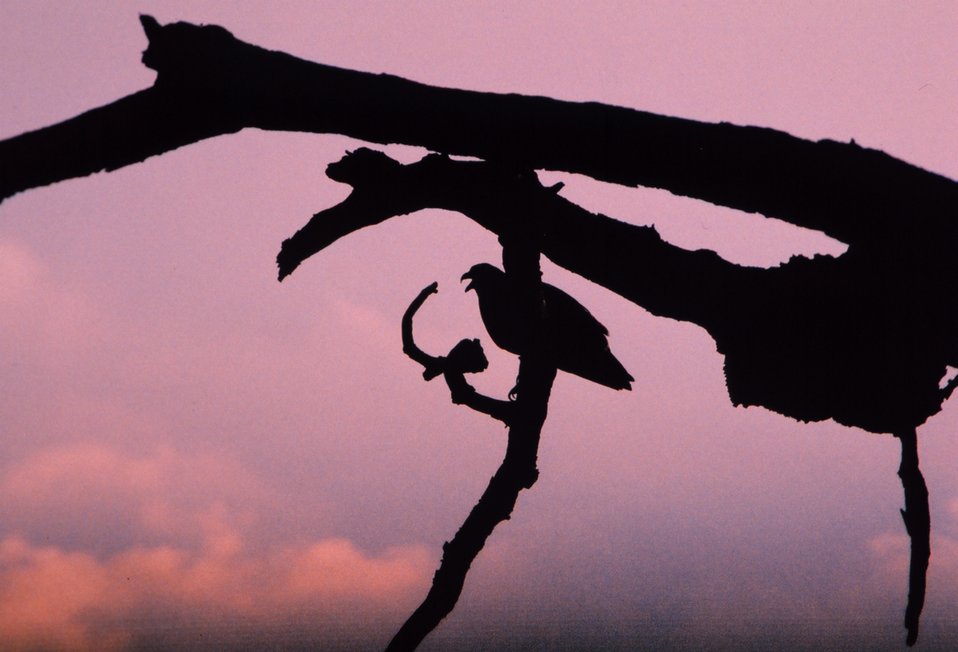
Evening silhouette of an osprey perched in a dead tree.